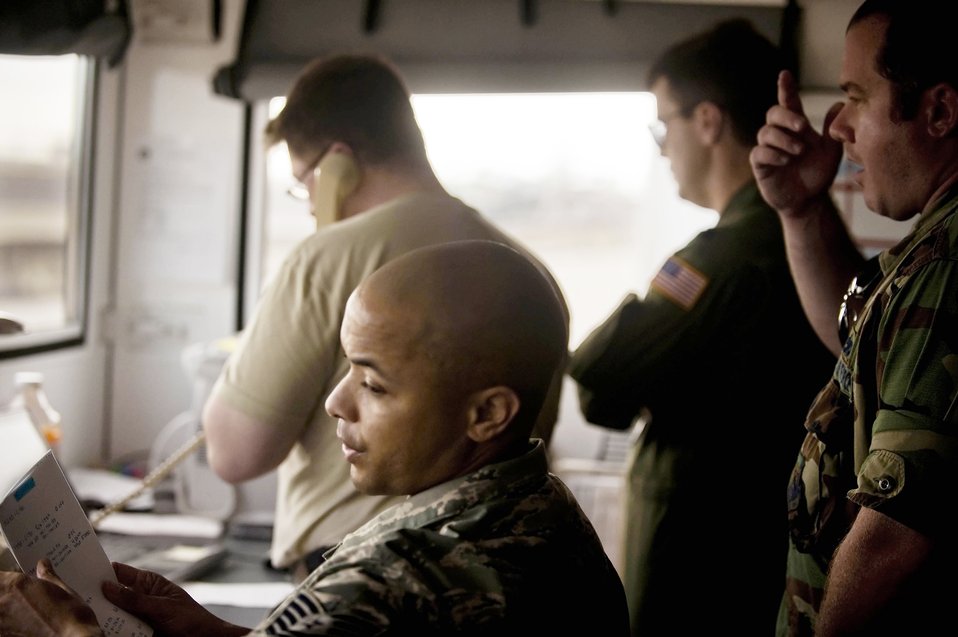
Operation Unified Response

Members of the 512th Airlift Control Flight help control airflow at Homestead Air Reserve Base, Fla., as an influx of aircraft operate out of Homestead ARB to assist with the Haiti earthquake relief efforts Jan 24, 2010.